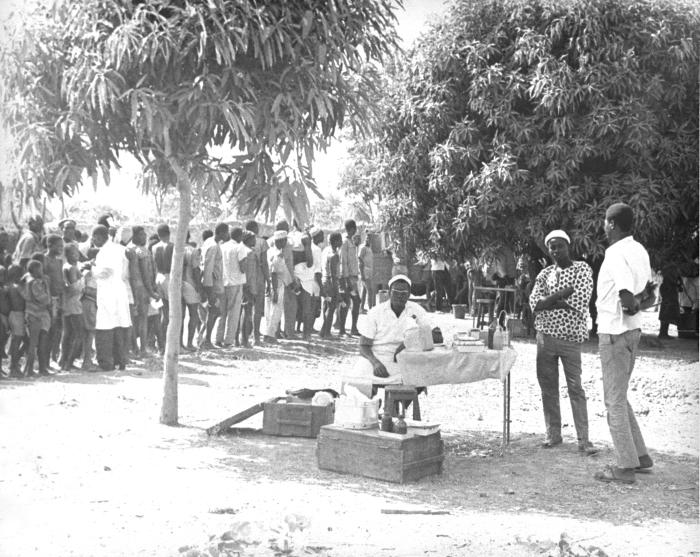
This prospection team was involved in the World Health Organization's Smallpox Eradication Project in Niger, 1968.